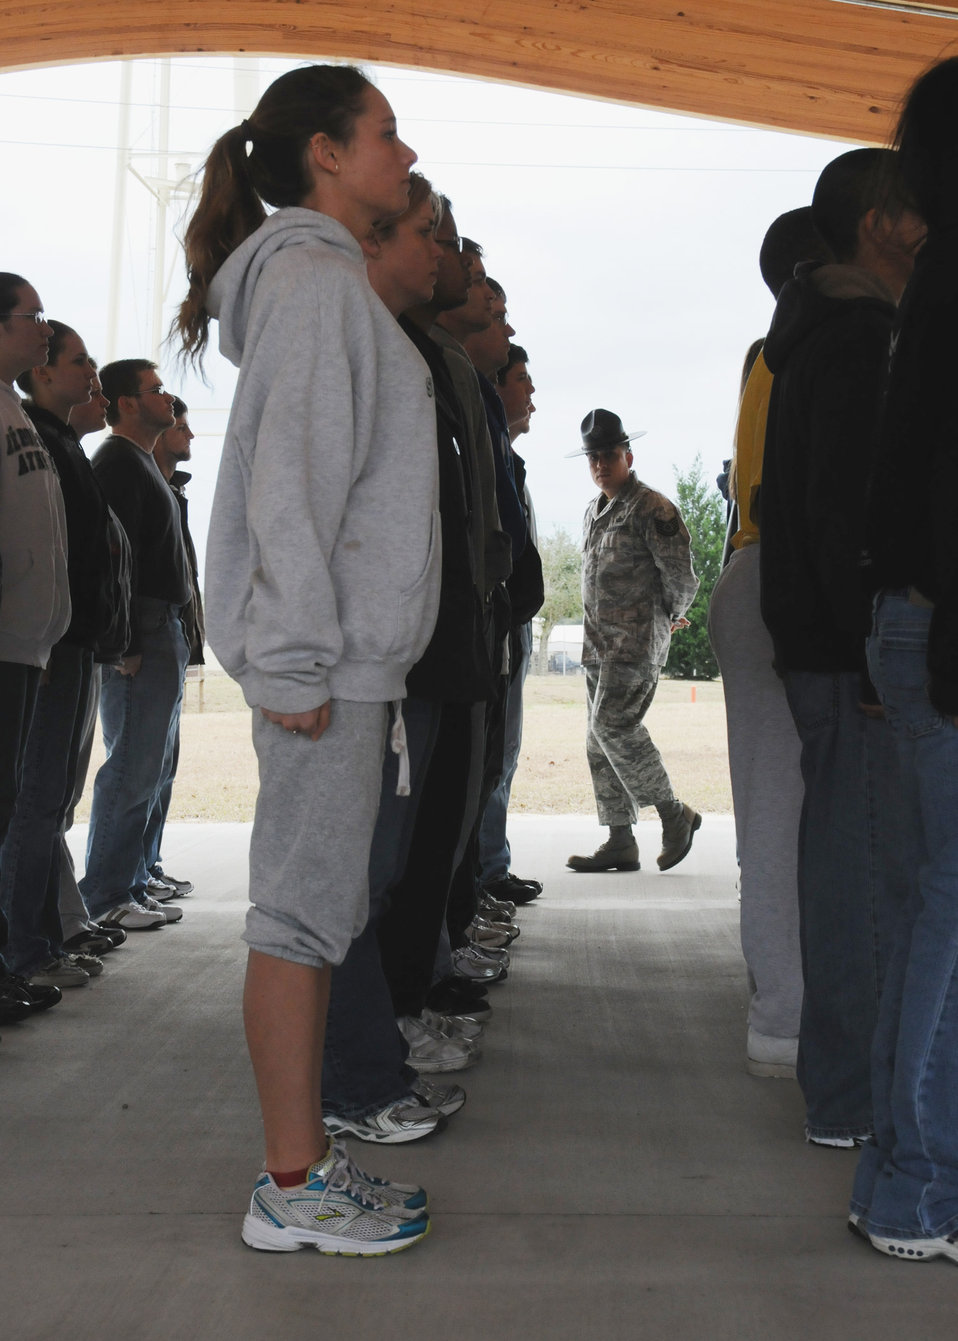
Former BMT instructors give new Reserve recruits glimpse at 'Basic'

Tech. Sgt. Raul Lopez looks over his formation of new Air Force Reserve recruits Feb. 6, 2010, at Duke Field. Sergeant Lopez and his wife, Master. Sgt. Tiffany Lopez both former active-duty military training instructors at Lackland Air Force Base, Texas, volunteered their time to help new reserve recruits prepare for basic training during the drill weekend here. The husband and wife team spent four years instructing new trainees at Lackland, graduating 25 flights from Basic Military Training. Sergeant Tiffany Lopez is assigned to the 96th Force Support Squadron. Sergeant Raul Lopez is assigned to the 96th Logistics Readiness Squadron.